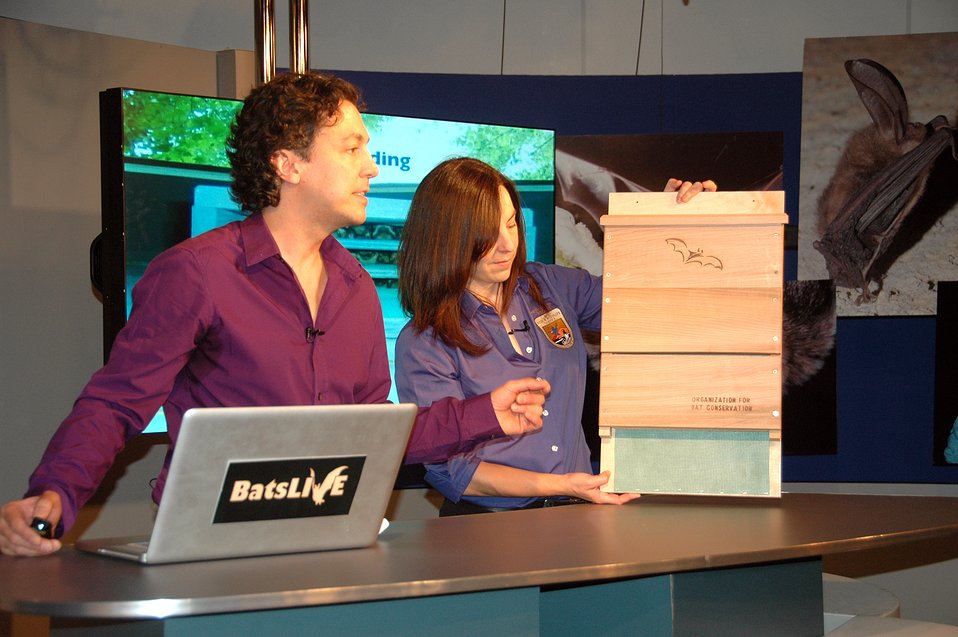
Rob Mies and Ann Froschauer with a bat house

Rob Mies (Organization for Bat Conservation) and Ann Froschauer (USFWS) talk about bat houses on the BatsLIVE! Distance Learning Adventure